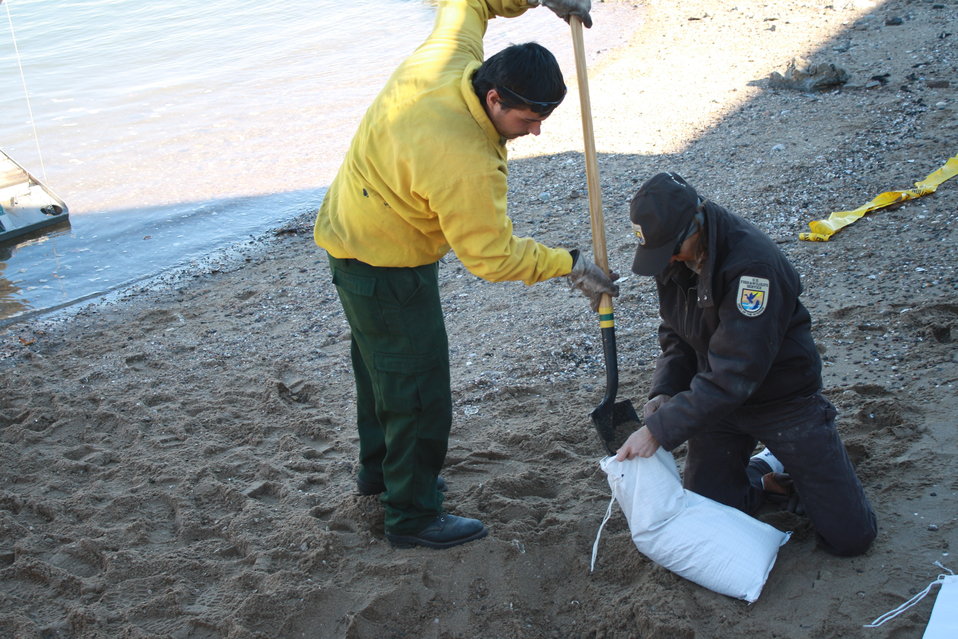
Beginning repairs at Stewart B. McKinney National Wildlife Refuge (CT)

Staff and crews filling sand bags to repair holes in the ground and foundation at Outer Island. The sand bags will help secure and stabilize the disturbed ground to ensure public safety.